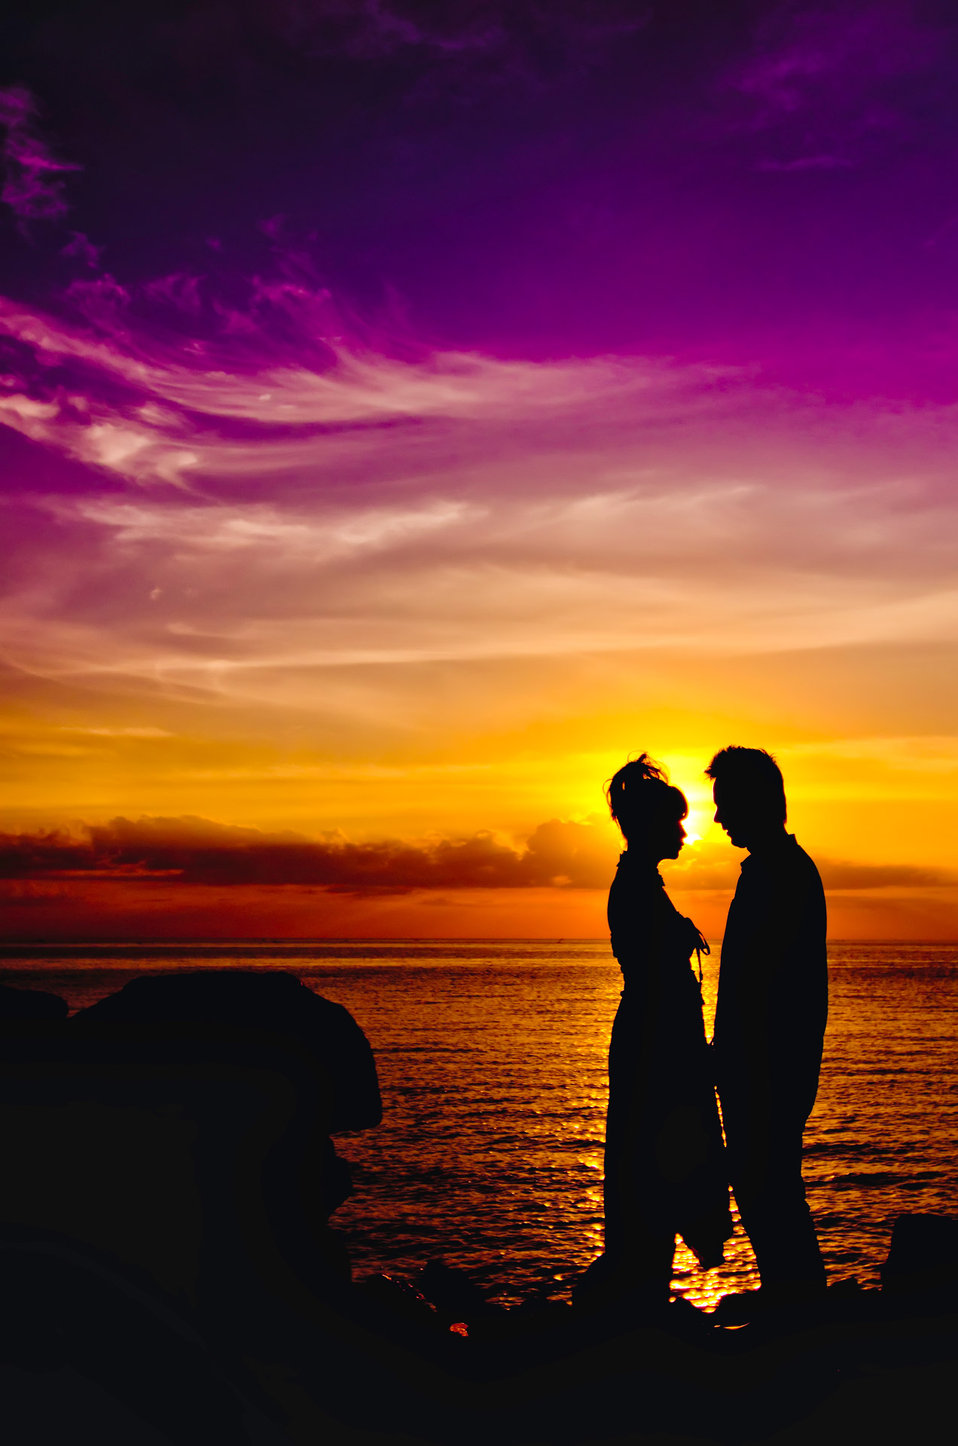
Loving more

Love the girl and sunset.